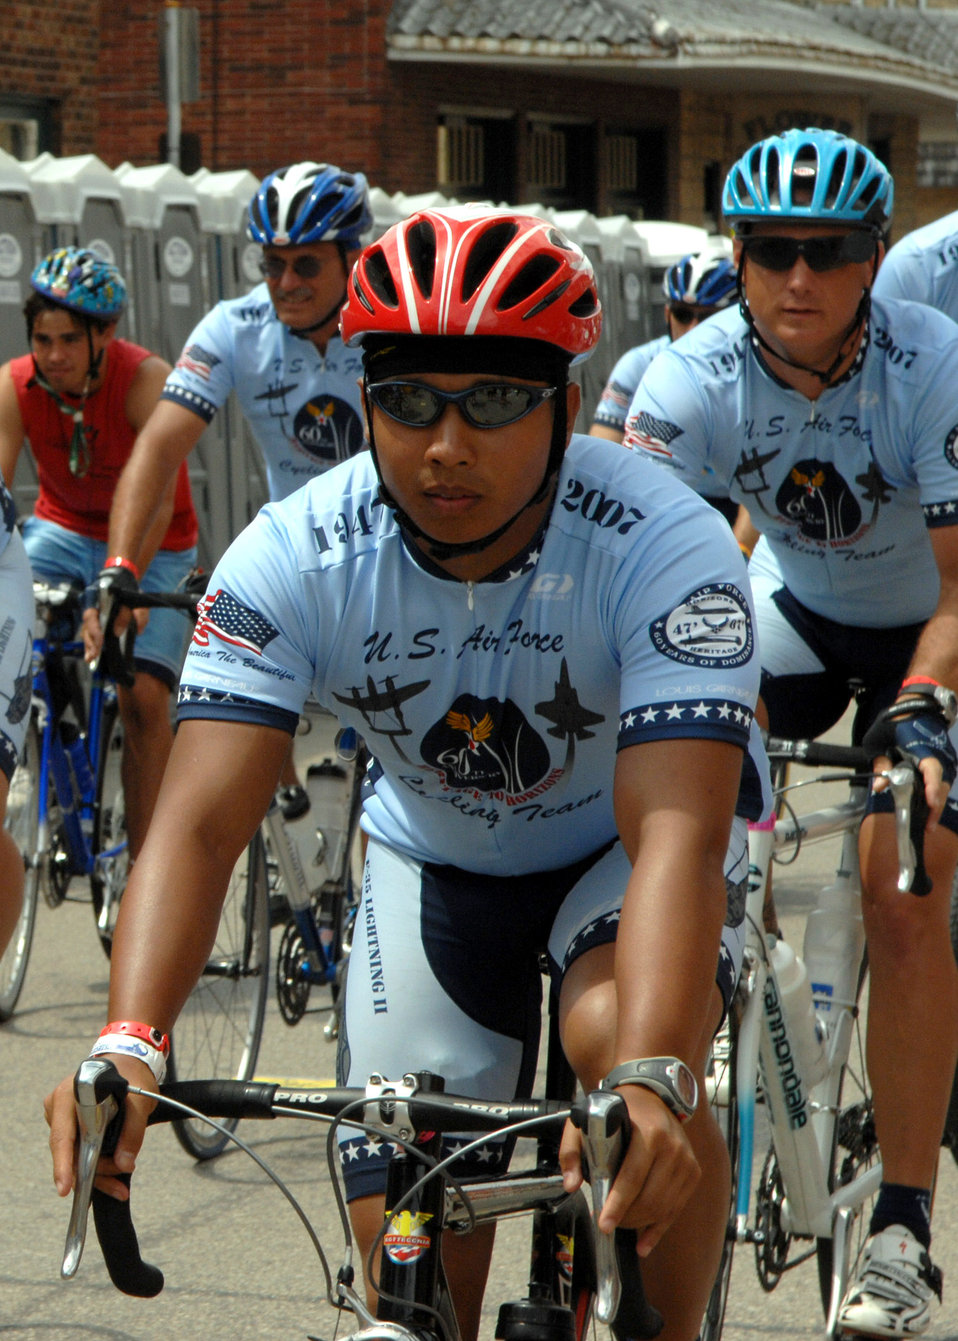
Air Force team a large presence in annual bike ride

First Lt. Jose Cadelina and other members of the Air Force Cycling Team ride into Bellevue, Iowa, as they complete the Des Moines Register's Annual Great Bicycle Ride Across Iowa, or RAGBRAI, July 28. The 148 Air Force team members completed seven days of riding, maintaining an average of 70 miles a day, across the state of Iowa to support recruiting efforts and to show Airmen as being fit to fight.